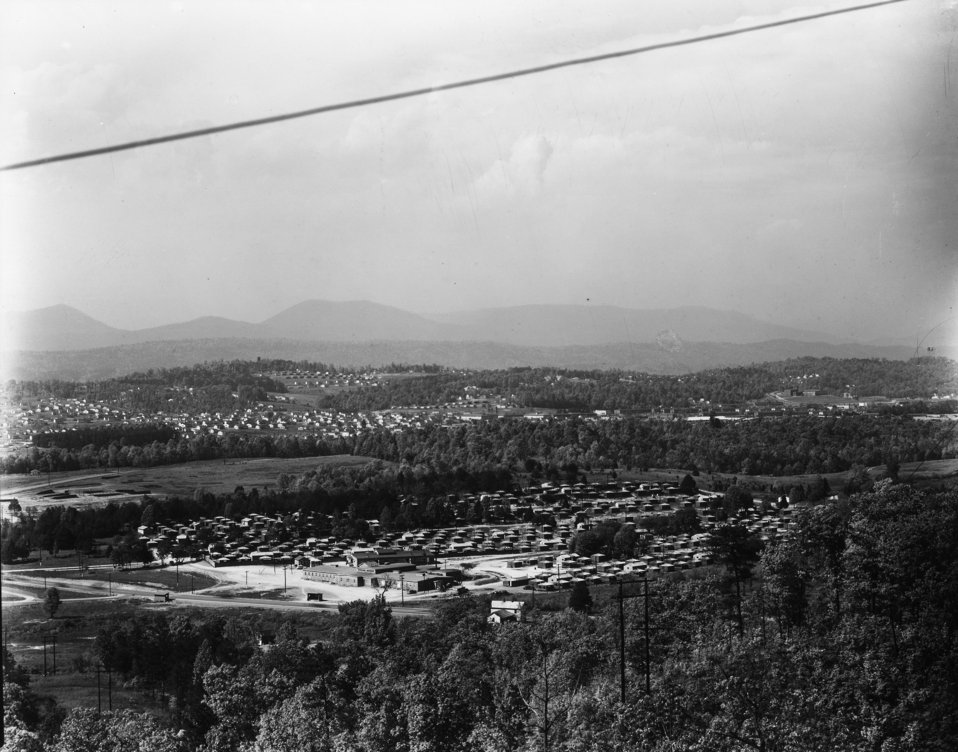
Aerial of Oak Ridge